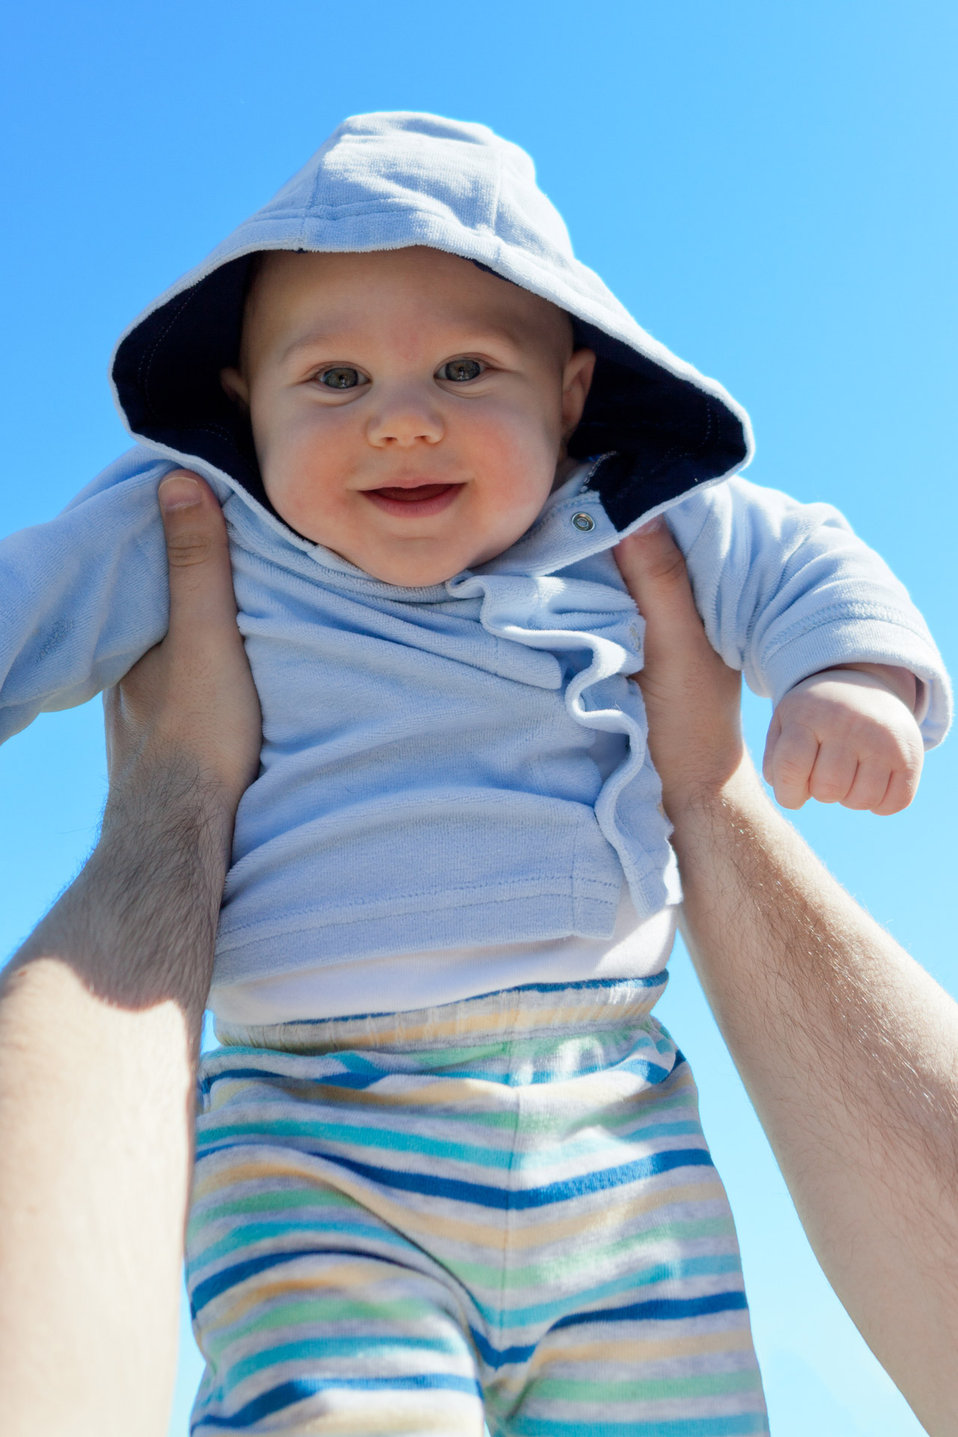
Baby against blue sky

Dad holding baby against blue sky.